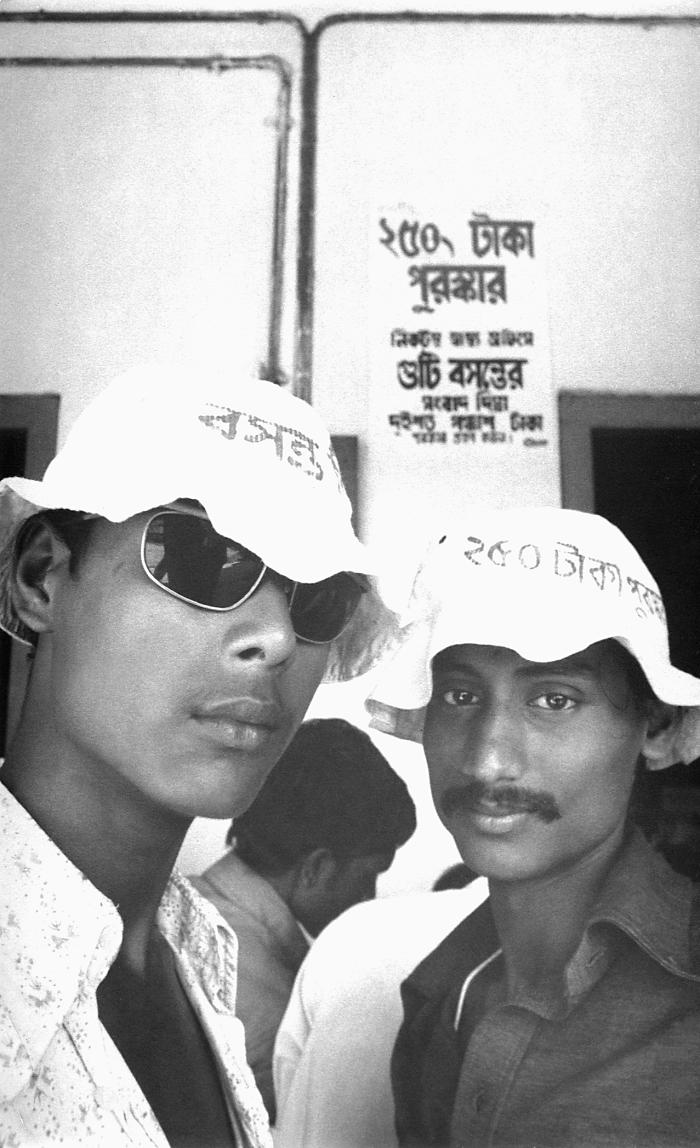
These two Bangladesh men were standing in front of a poster, and wearing hats that displayed the message that the reward paid for reporting a confirmed smallpox case had risen to 250 Taka. The Taka is the official currency of Bangladesh, and is produced in 8 different denominations. The last known case of naturally occurring smallpox, a young girl named Rahima Banu, was reported by an 8 year old girl, who was paid her 250 Taka reward. All rewards were handed out in a public place.